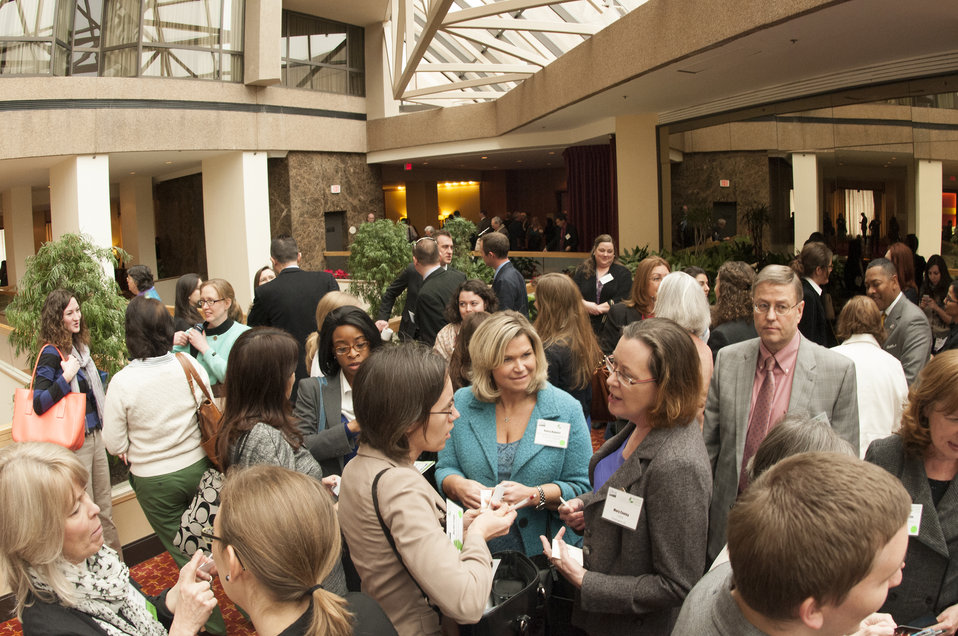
The U.S. Department of Agriculture's (USDA) 2013 Agricultural Outlook Forum is held at the Crystal Gateway Marriott in Arlington, VA on Feb. 22, 2013. This forum is an annual event that brings together producers, policymakers, business, government, and industry leaders to meet, exchange ideas, and discuss timely issues in the forefront of America's agriculture.